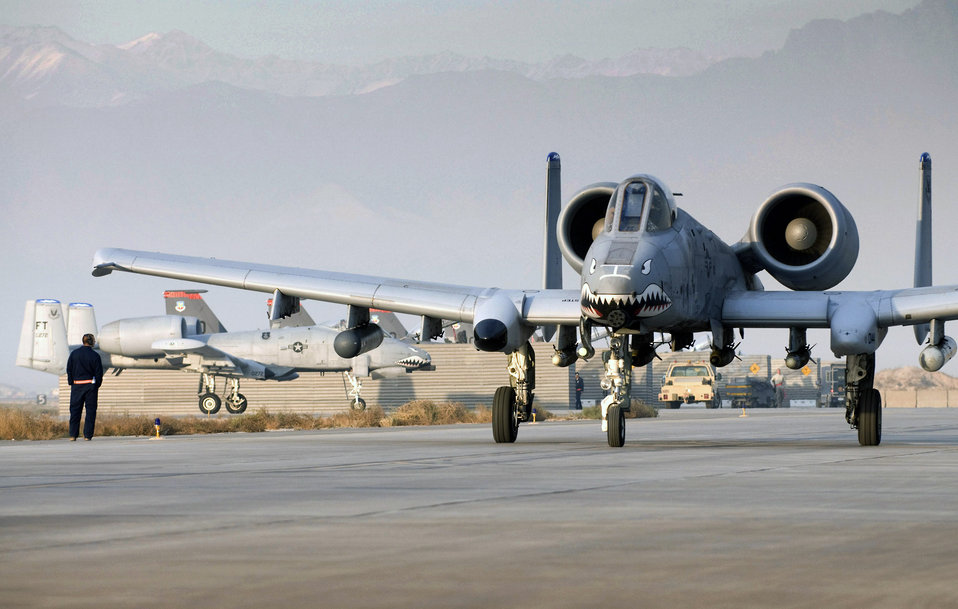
Thunderbolts active during the holidays

Capt. Eric Fleming taxies an A-10 Thunderbolt II Dec. 2 on the flightline at Bagram Airfield, Afghanistan. The teeth painted on the nose of the aircraft symbolizes the legacy of the fighter squadron, dating back to the Flying Tigers of World War II. Captain Fleming is the assistant wing weapons and tactics officer and an A-10 pilot. He is deployed from Moody Air Force Base, Ga., and hails from Philadelphia.